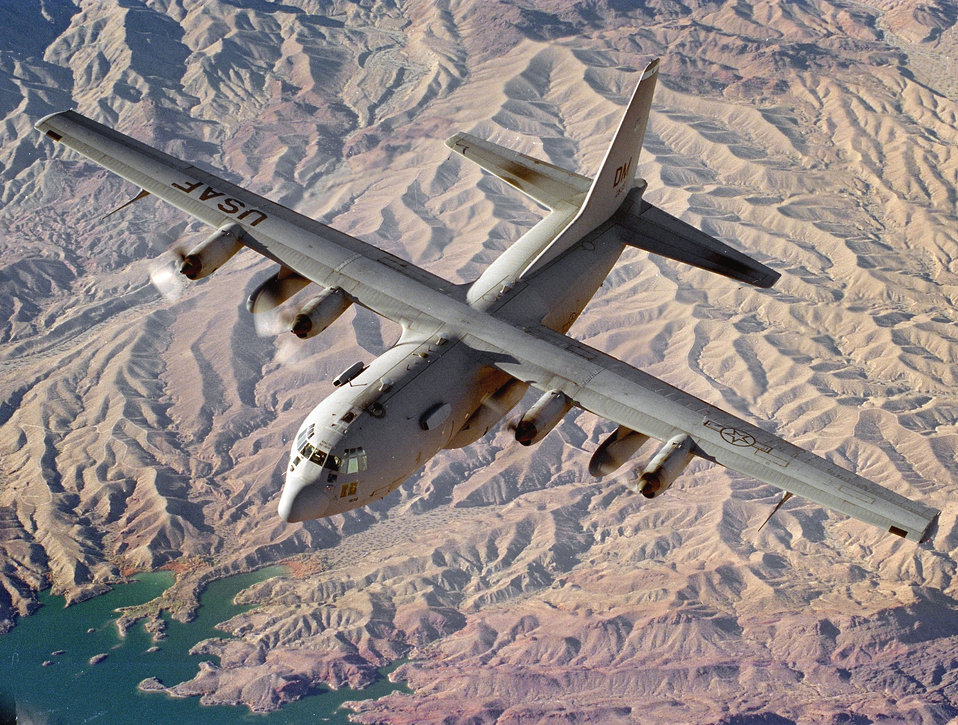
Modified Hercules

LAKE MEAD, Ariz. -- An EC-130E Airborne Battlefield Command and Control Center from the 42nd Airborne Command and Control Squadron, Davis-Monthan Air Force Base, Ariz., flies a training mission over Lake Mead, Ariz., on Dec. 19, 1999. The squadron's seven EC-130E Hercules aircraft have been modified to carry the Airborne Battlefield Command and Control Center capsule which houses a 12-person battle staff. The battle staff includes operations, intelligence and communications people to provide unified and theater commanders capabilities for combat operations.